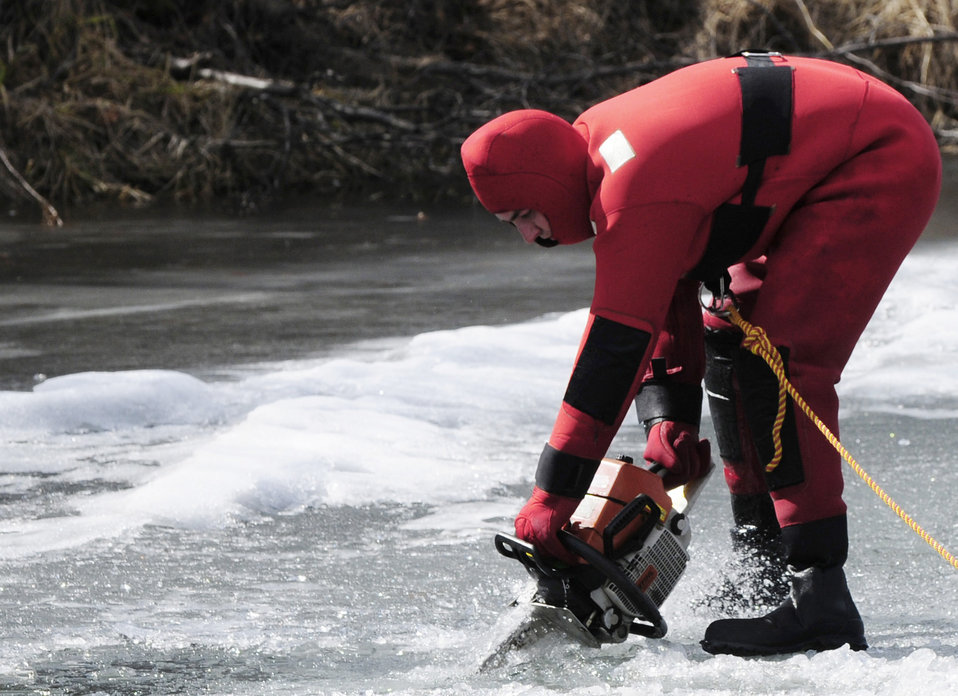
Firefighters train in icy lake

Staff Sgt. Eric Brownsell uses a chainsaw to make a hole in the frozen lake during icy water rescue training May 6, 2011, at Eielson Air Force Base, Alaska. Sergeant Brownsell is assigned to the 354th Civil Engineer Squadron Fire Protection Flight.